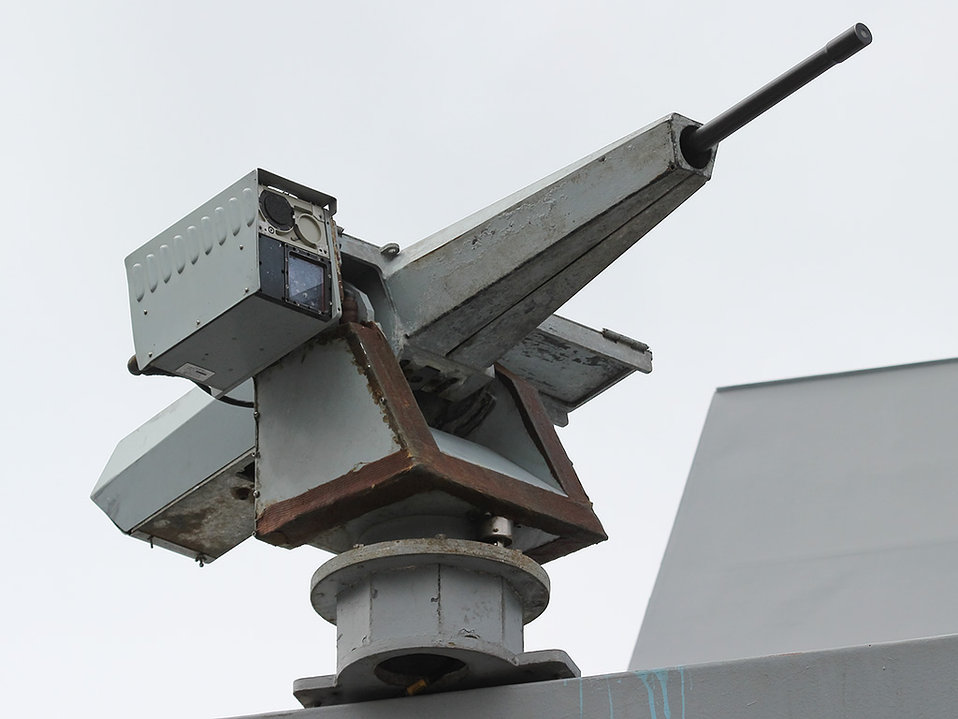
A Reutech Sea Rogue remote weapon system fitted with a 12.7 mm machine gun, mounted on a South African Navy Valour class frigate